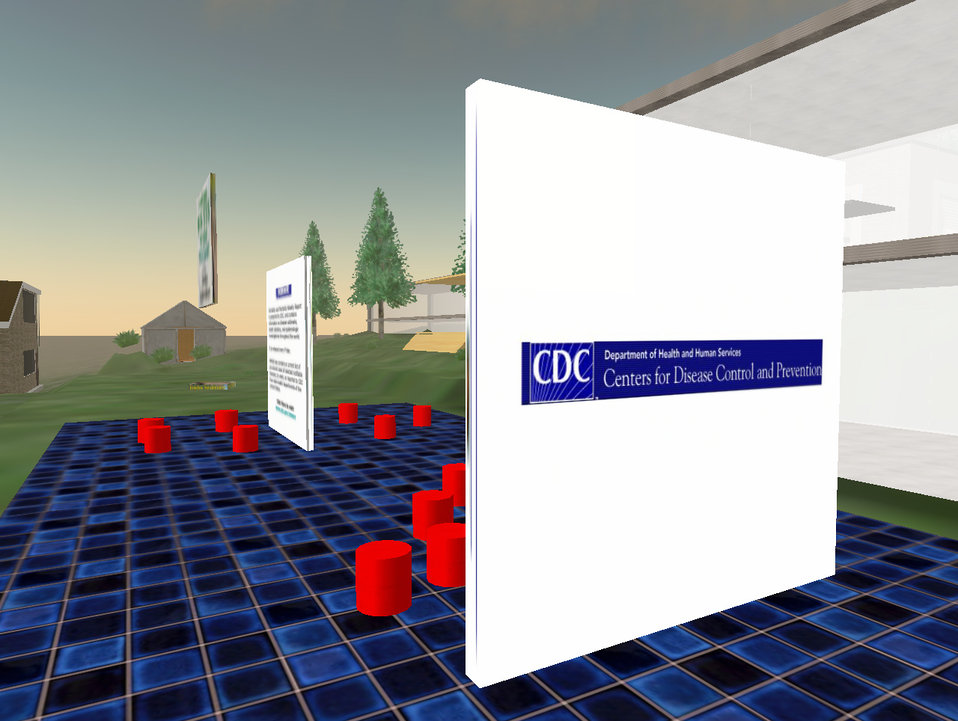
CDC's presence in the online virtual world 'Second Life' launched in August, 2006. Dr. John Anderton designed the initial CDC space using in-world, i.e., Second Life, tools, creating hyperlinks to CDC websites including the MMWR, CDC.gov homepage, CDC podcasts and the Public Health Image Library, PHIL. CDC public health posters from the first 6 decades of the CDC's existence were displayed in the 'Public Health Poster of the Week' billboard feature, which was updated weekly from August through the end of December, 2006.